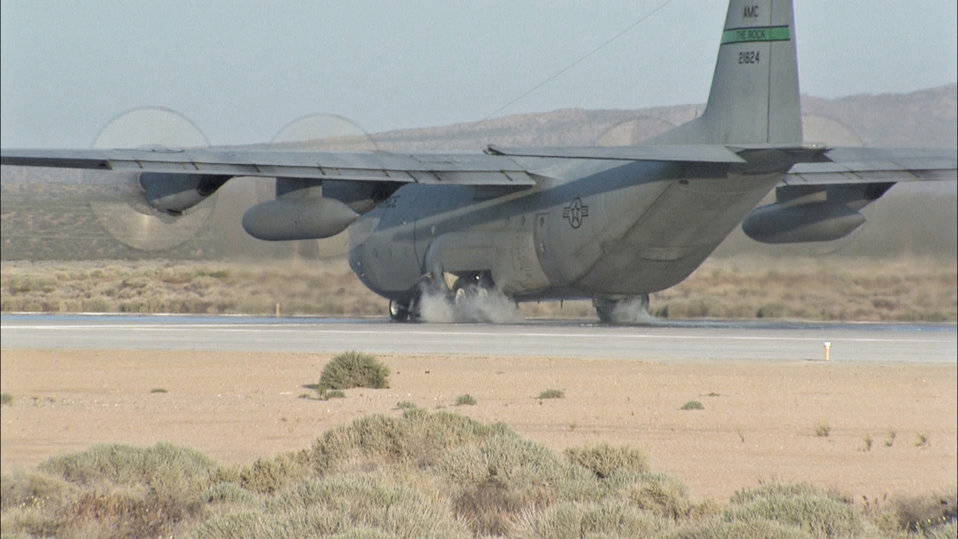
WBSIP at Edwards AFB

A C-130E from the 19th Airlift Wing at Little Rock Air Force Base, Ark., comes to a screeching halt during a Wheel Brake System Improvement test May 4, 2011, at Edwards Air Force Base, Calif. The C-130 is on loan to the 418th Flight Test Squadron to test out new carbon brakes and the Mark IV Digital Antiskid Control Unit.